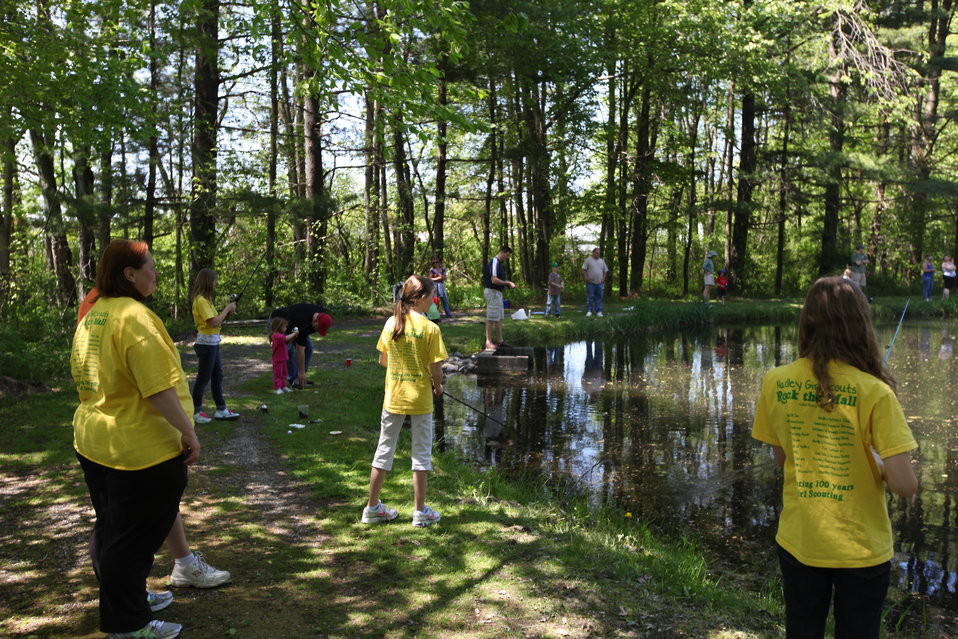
Youth Fishing Derby 2012

Megan Nagel/USFWS